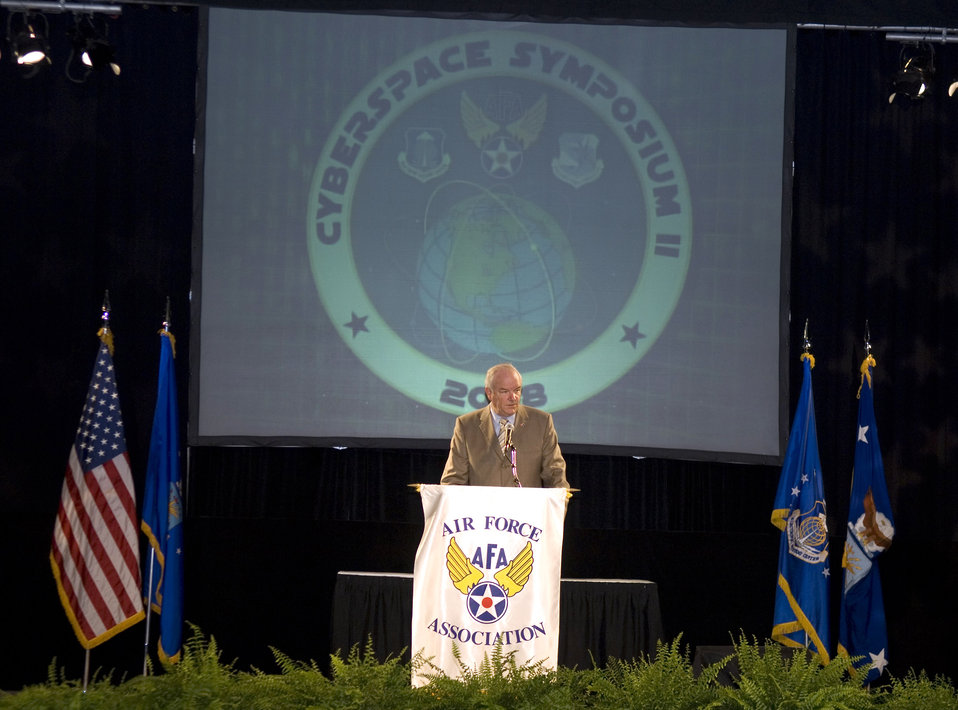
Secretary Wynne speaks at cyber symposium

Air Force Secretary Michael W. Wynne addresses the second Cyberspace Symposium in Marlborough, Mass., June 18.